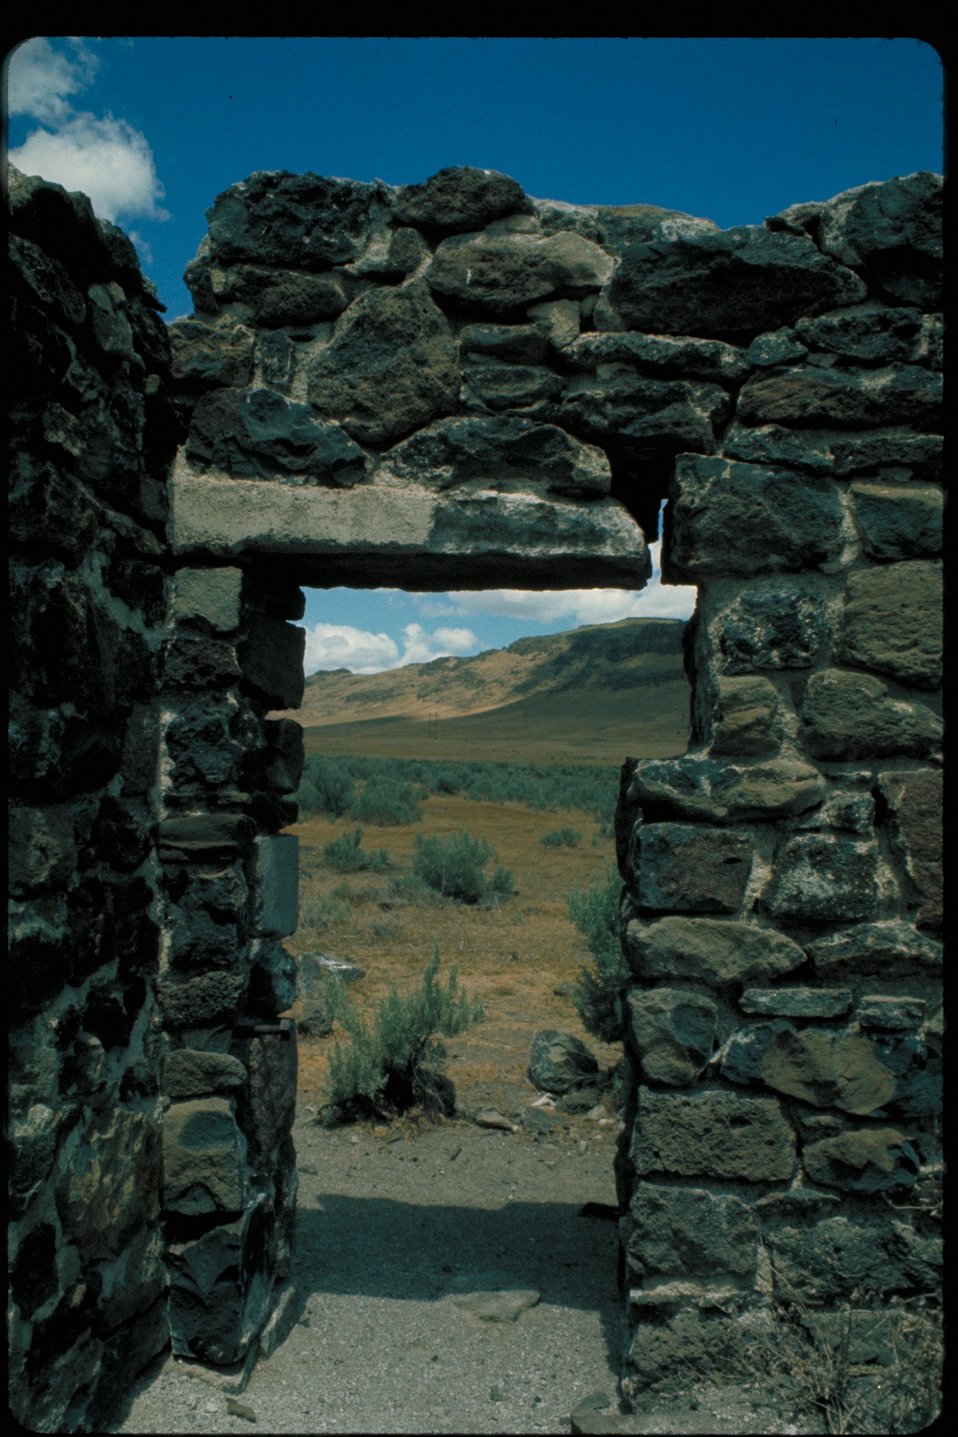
Hot Springs east of Mountain Home Oregon Trail Lower Snake River District